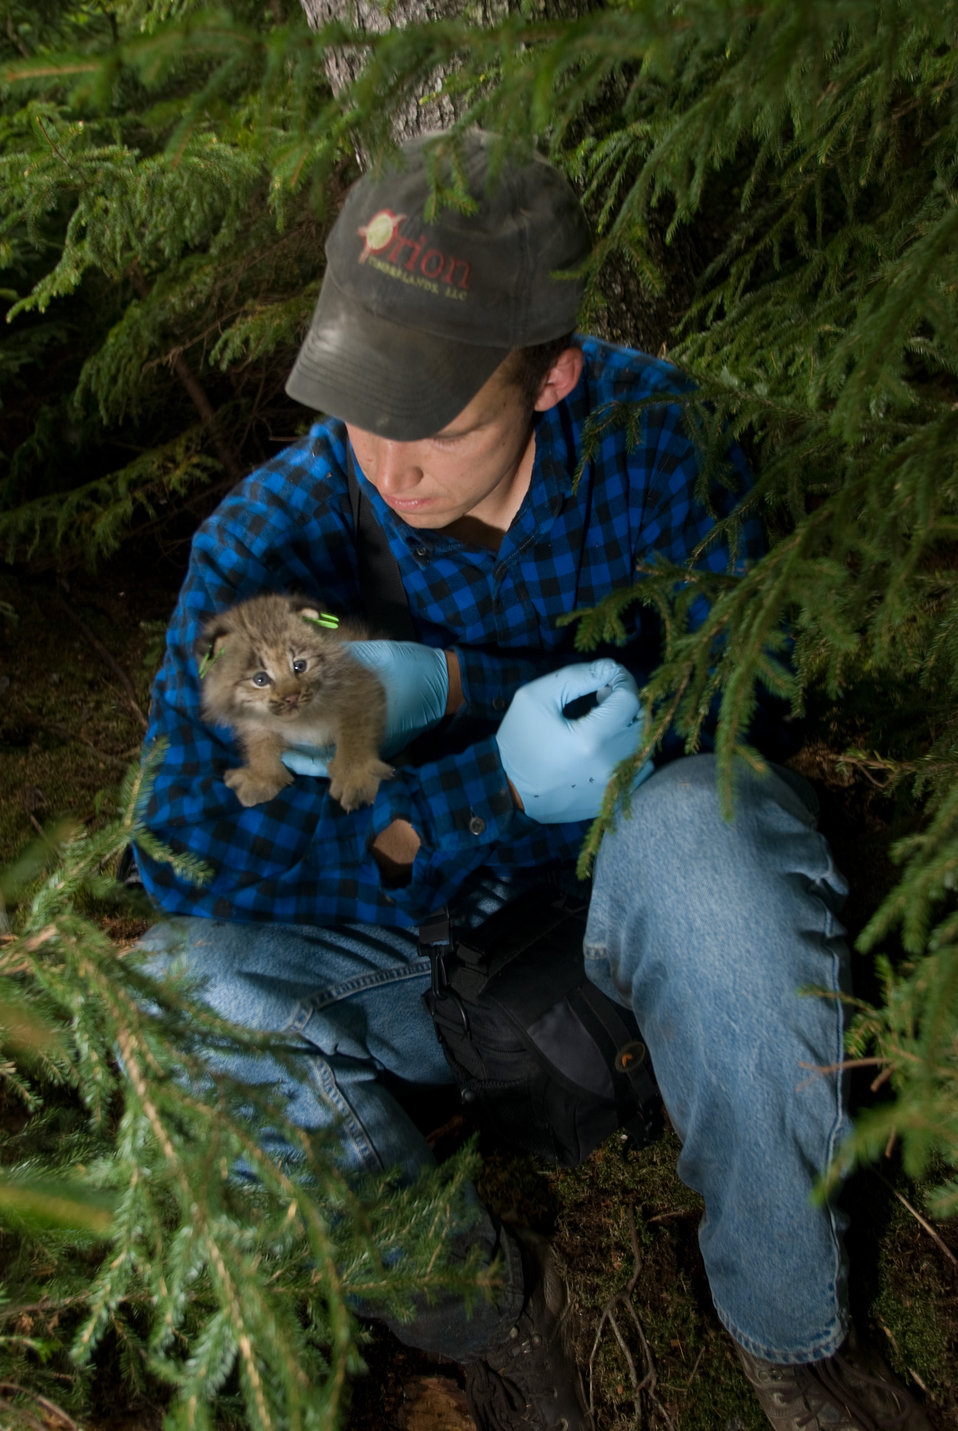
Awaiting measurement

A Canada Lynx kitten awaits its turn to be measured in the arms of a forester who works for the owners of the land. As part of an effort to better serve their partnership, biologists often invite land owners and managers to their den visits to share the experience of the lynx project.